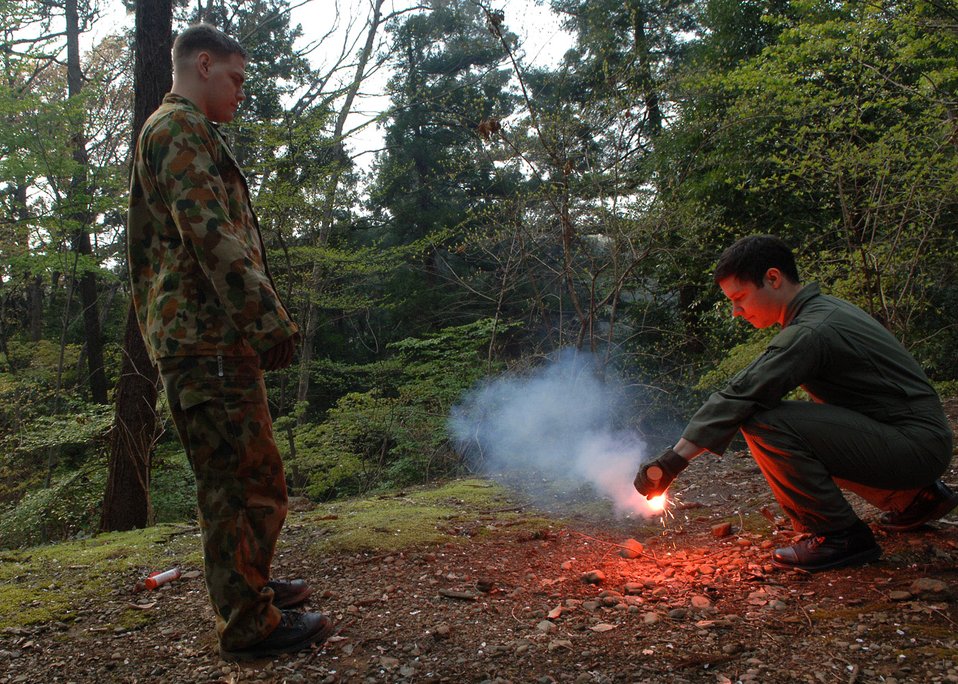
Training to survive

Senior Airman Jason Davis trains Capt. Pierre Alvarado on igniting flares April 10 at the Tama Hills Recreation Center near Yokota Air Base, Japan. Airman Davis is a a survival, evasion, resistance and escape specialist from the 374th Operational Support Squadron, and was recognized as the 2006 Pacific Air Forces SERE Airman of the Year. SERE specialists train members from all branches of the military on how to survive in all environments and conditions. Captain Alvarado is from the 36th Airlift Squadron.